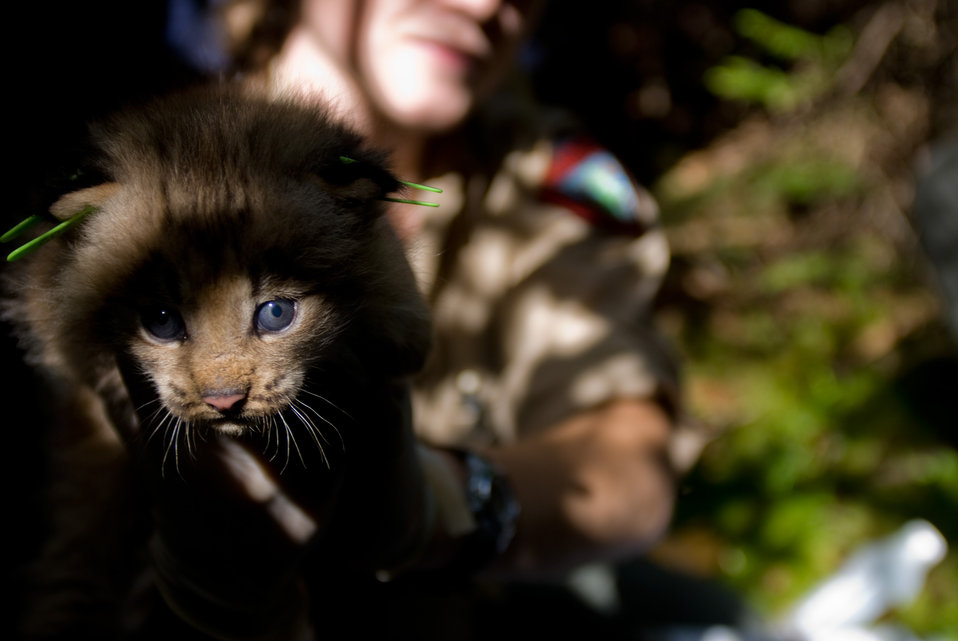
Canada Lynx kitten

A kitten is posed for a photograph during the first den visit of the week.